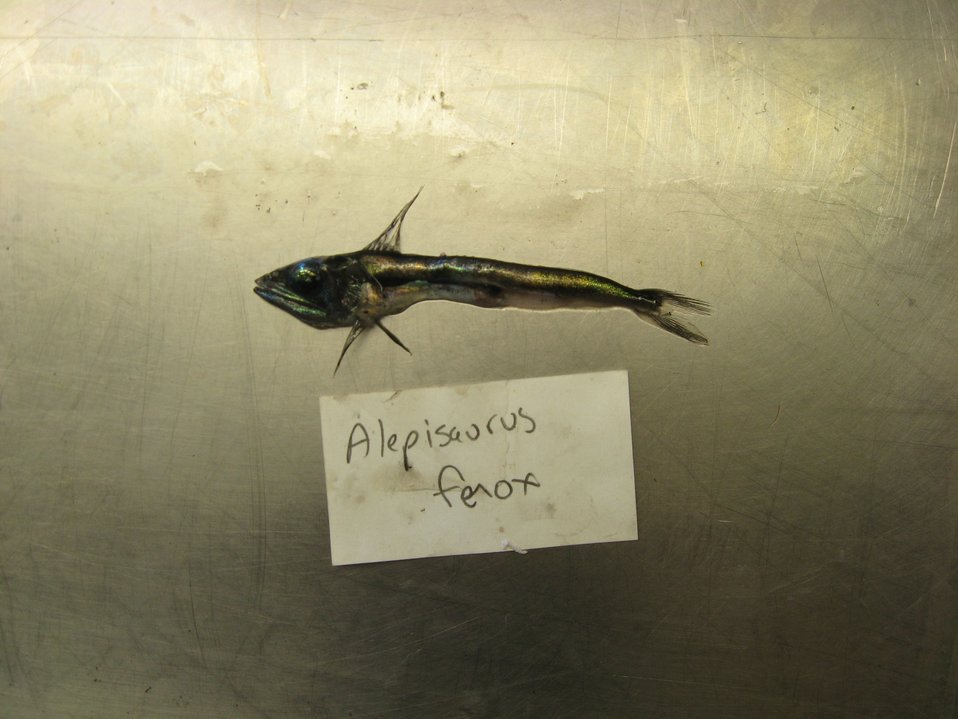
Alepisaurus ferox